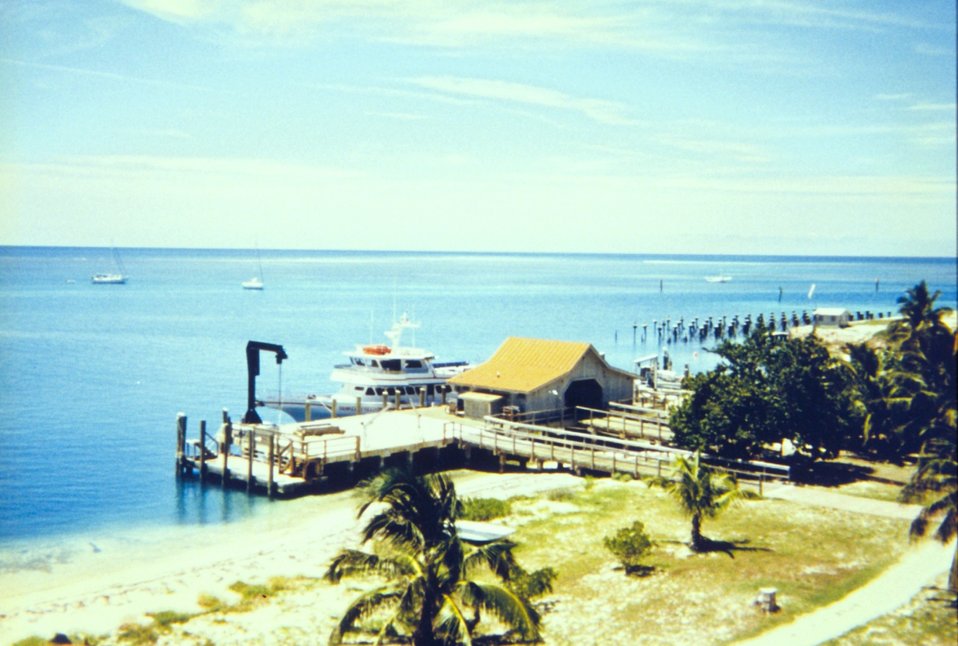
The dock at Fort Jefferson